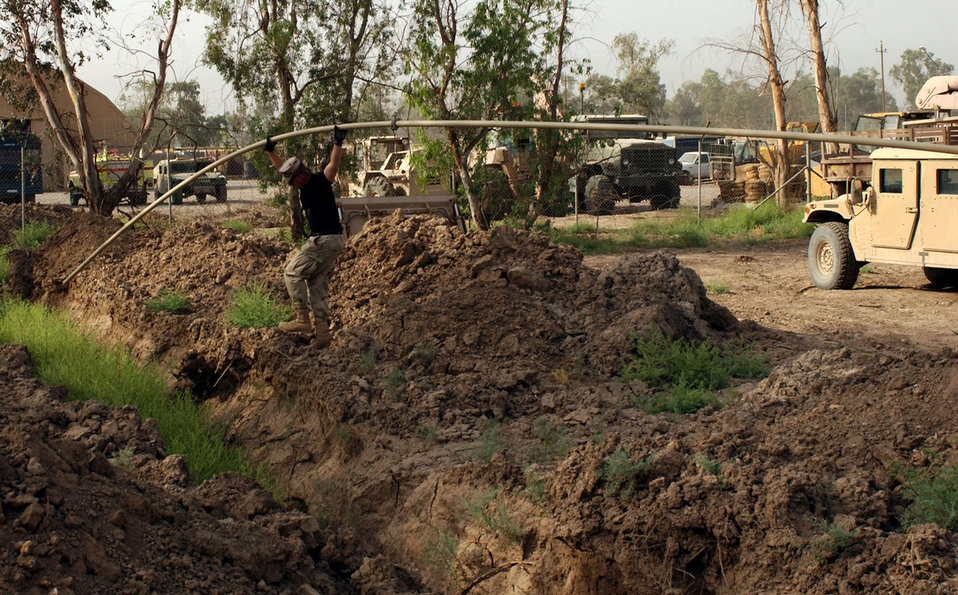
Deployed plumbers keep water flowing

BAGHDAD, Iraq -- Staff Sgt. Sam McCray installs a section of a water pipe. More than 5,000 feet of pipe has been laid to bring fresh water to people here. He is assigned to the 447th Expeditionary Civil Engineer Squadron and is deployed from Kadena Air Base, Japan.